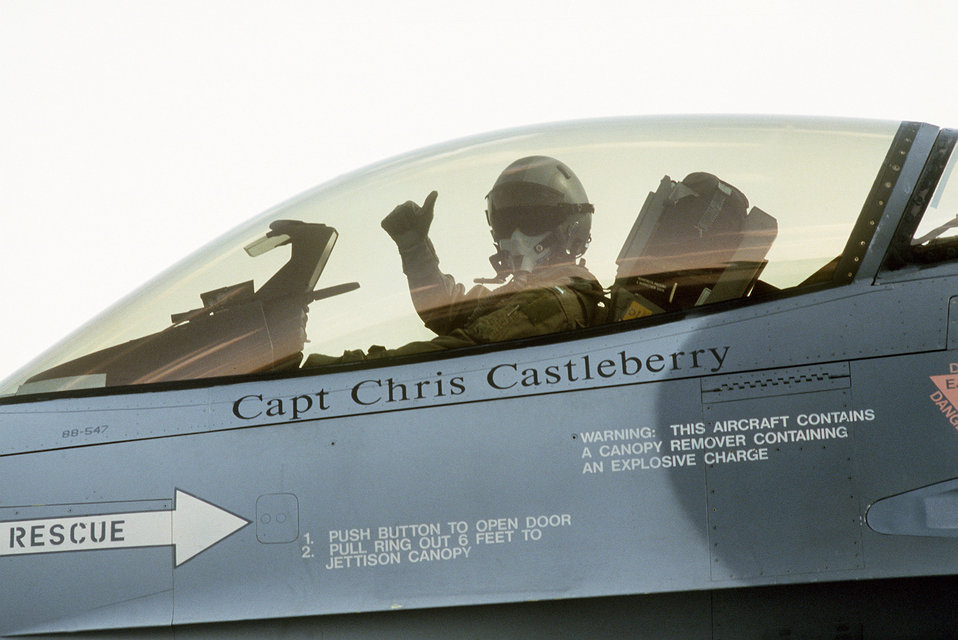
Thumbs up signal from a F-16C Fighting Falcon

1990's -- Capt. Chris Castleberry, a pilot from the 421st Tactical Fighter Squadron, gives the thumbs up signal from the cockpit of his F-16C Fighting Falcon aircraft as he prepares for takeoff during Operation Desert Storm.